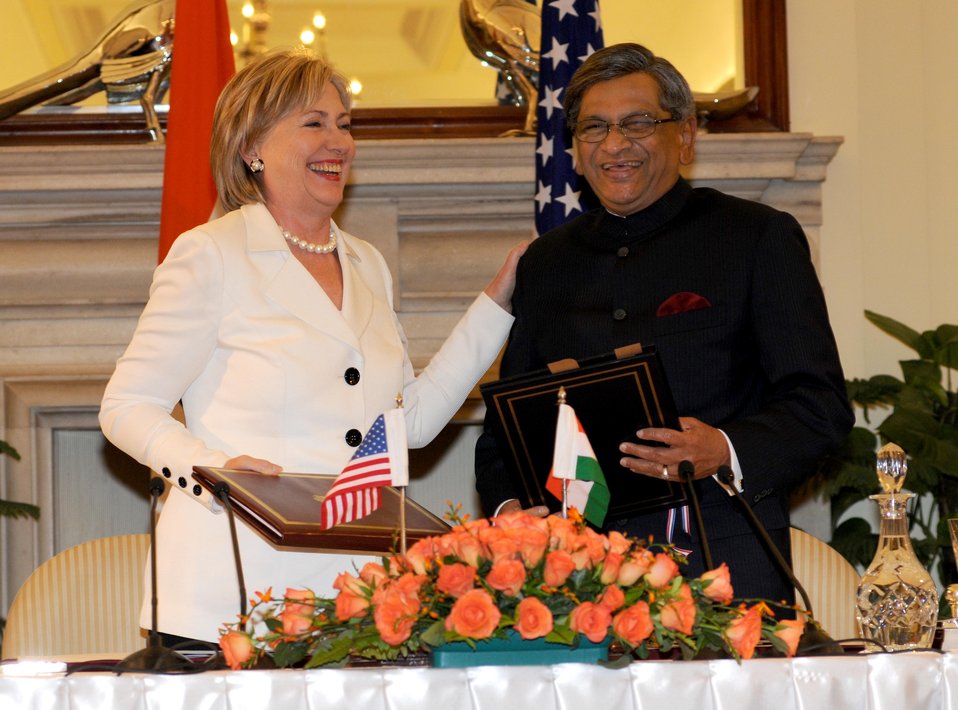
U.S., India Sign Bilateral Science and Technology Endowment Agreement

U.S. Secretary of State Hillary Rodham Clinton and Indian Minister of External Affairs S.M. Krishna after signing of a U.S.-India bilateral science and technology endowment agreement in New Delhi, India July 20, 2009.